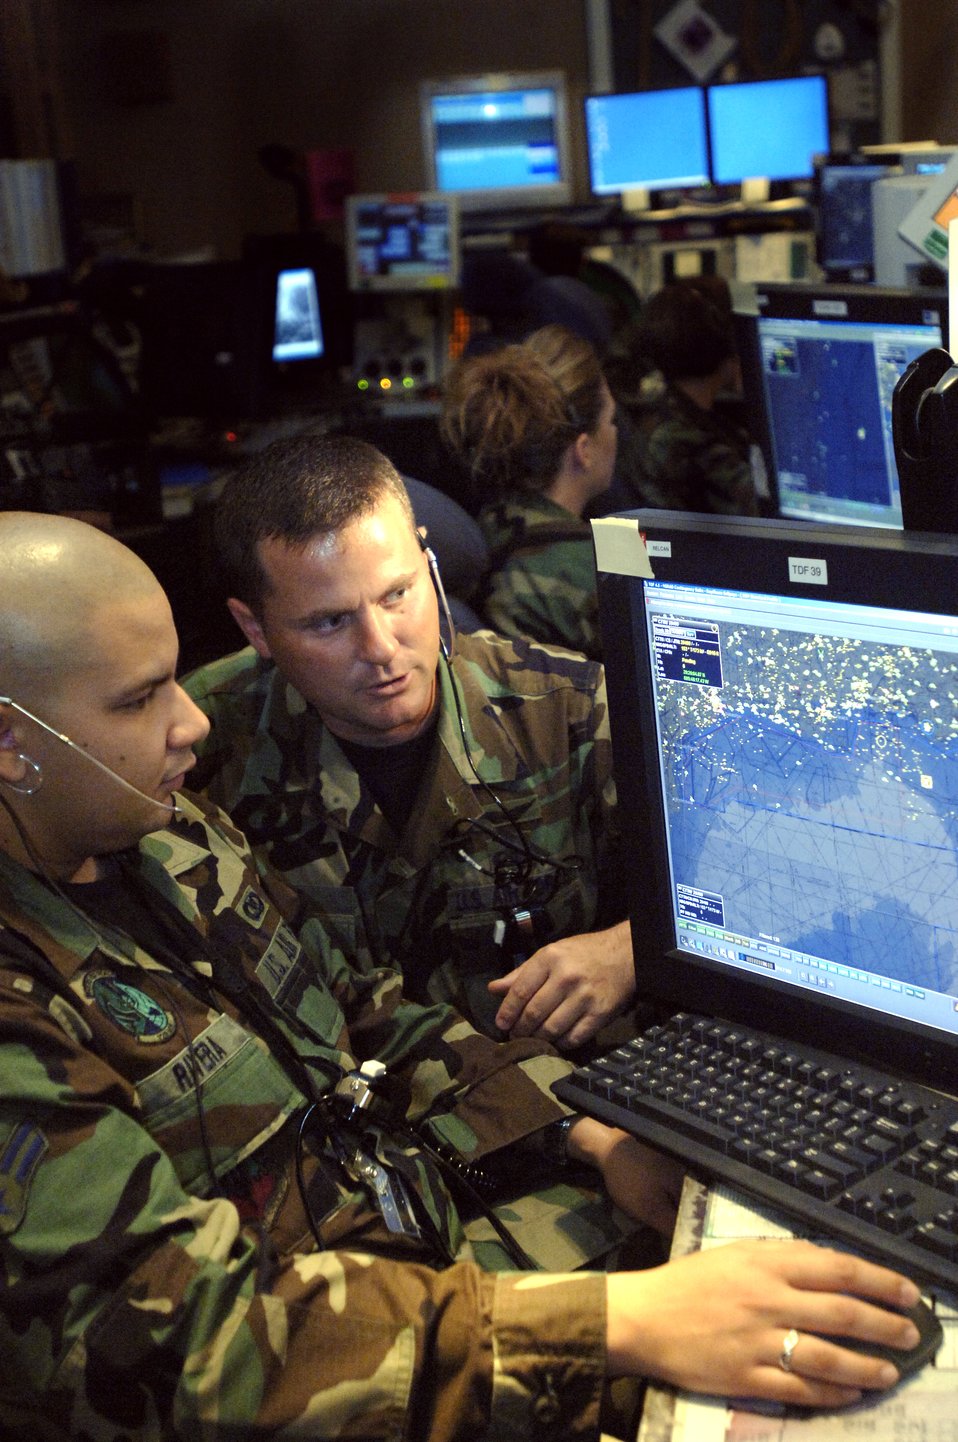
Business changes dramatically for air operations center

Airman 1st Class Samuel Rivera listens to Master Sgt. Lynn Boop at the Air Operations Center at Tyndall Air Force Base, Fla. Sergeant Boop is superintendent of standards and evaluations for Southeast Air Defense. Airman Rivera is a tracking technician trainee deployed to Southeast Air Defense.